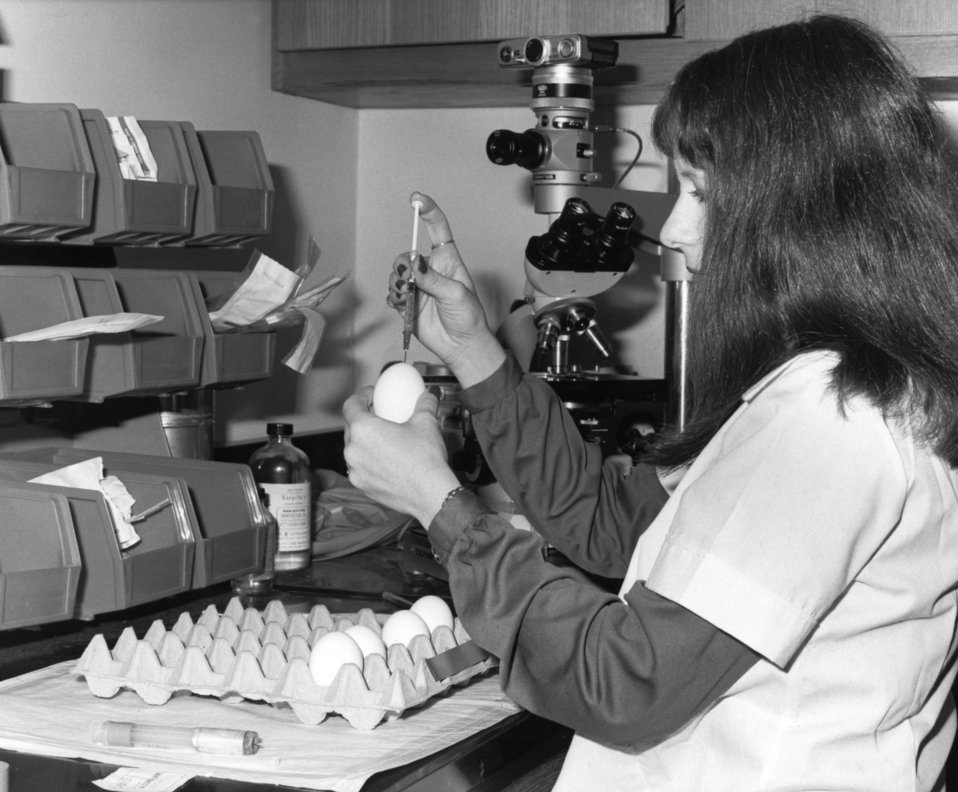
This 1968 photograph showed a Centers for Disease Control laboratorian inoculating 10-day-old embryonated chicken eggs with specimens containing the influenza virus.